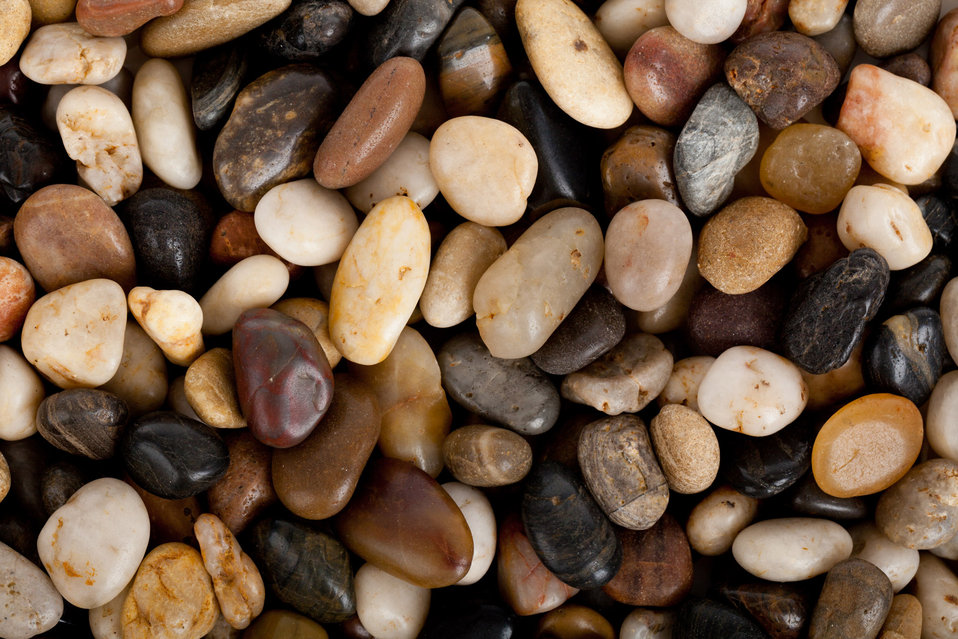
Pebbles background

Colorful pebbles background image.